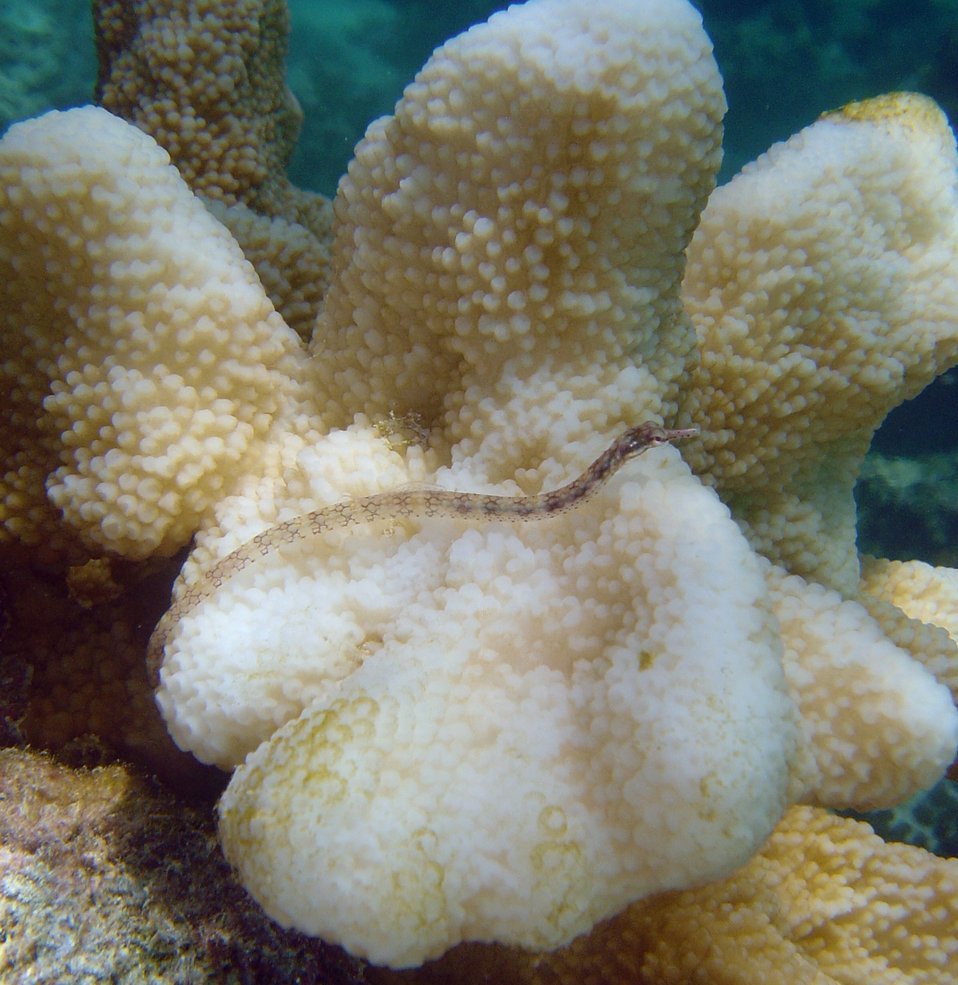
Network pipefish (Corythoichthys flavofasciatus)